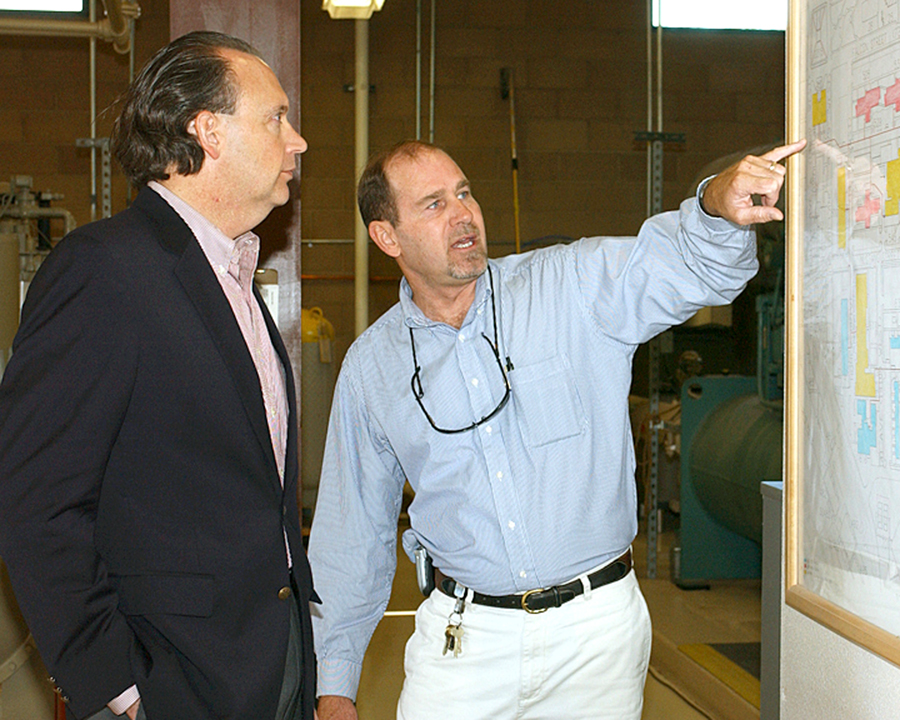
Luke shows off energy conservation program

Brian Fisher explains the upgrades on the central chiller plant at Luke Air Force Base, Ariz., to William C. Anderson, Air Force assistant secretary for installations, environment and logistics, on Oct. 26. Mr. Fisher is the 56th Civil Engineer Squadron chief of facility maintenance.